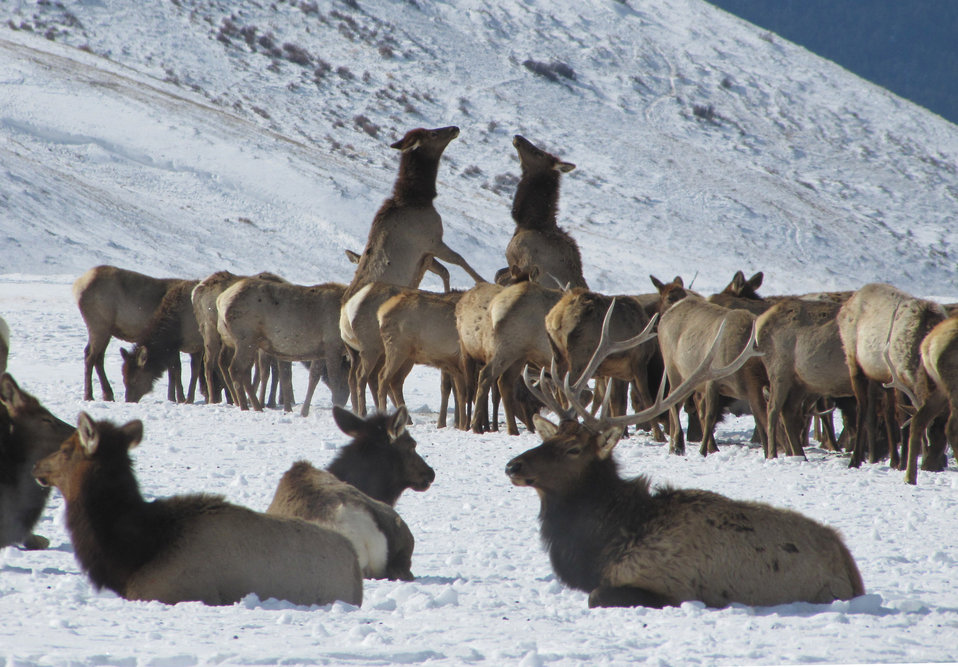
Unruly Females

Male elk are famous for fighting during the mating season, but 'boxing matches' between female elk can also occur throughout the year. Aggression between female elk is usually related to competition for local food sources. The two females here are next to a line of alfalfa pellets laid down that morning as part of the refuge's supplemental feeding program.